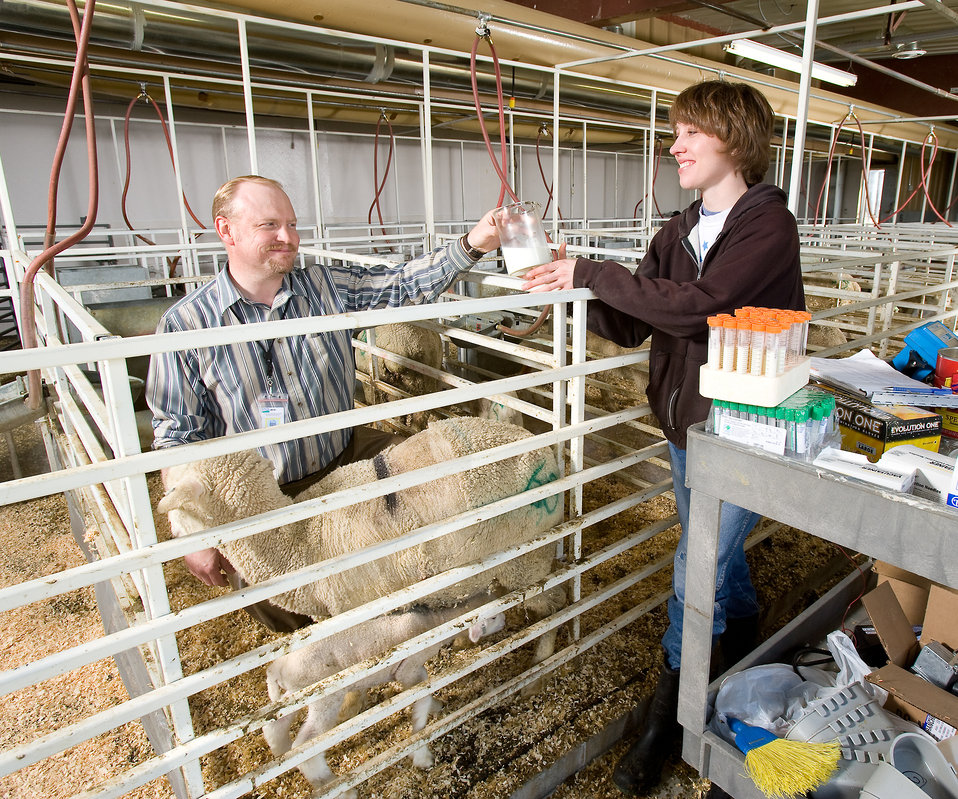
U.S. Department of Agriculture (USDA) Agriculture Research Service (ARS) animal scientist Bret Taylor and technician Tonya Thelen collect milk samples from a ewe to measure milk production and selenium content on Apr. 20, 2006.